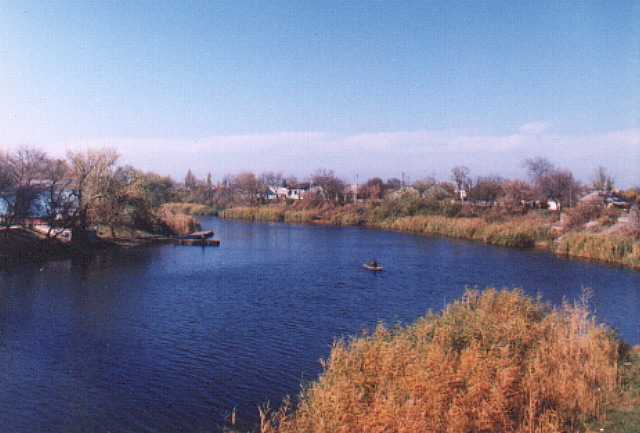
Català: El Vovtxa al seu pas per Pavlohrad. Українська: == Ліцензування: ==